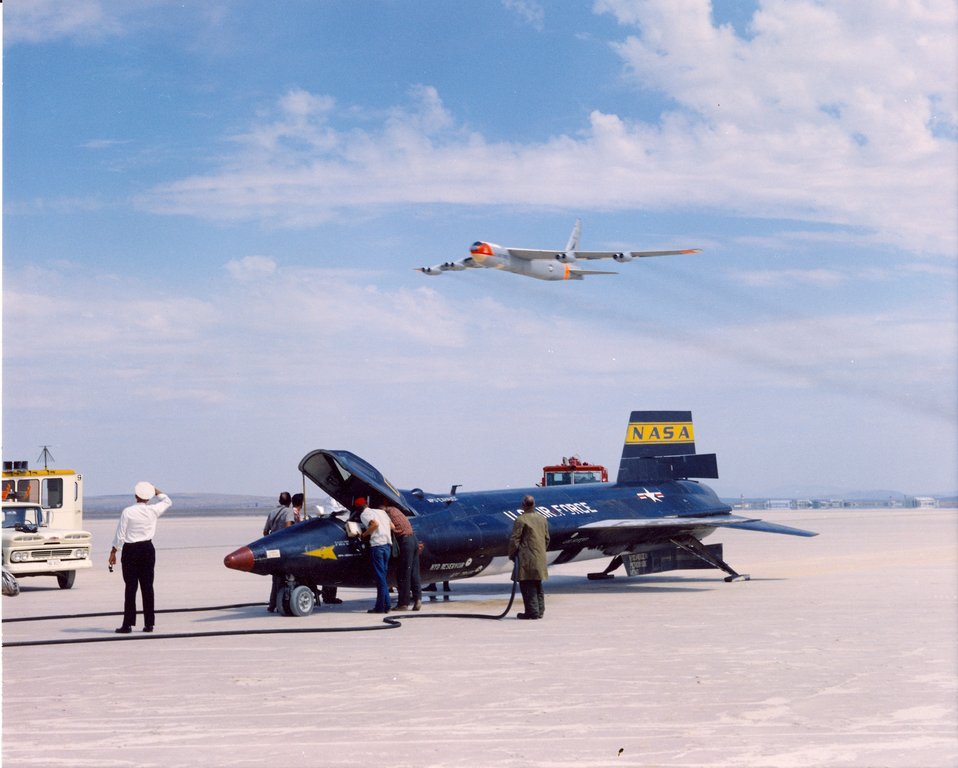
X-15 rocket plane after a mission

One of three X-15 rocket planes from North American rests on Rogers Dry Lake, Calif. in September 1961, following a mission. The B-52 launch aircraft flies overhead.